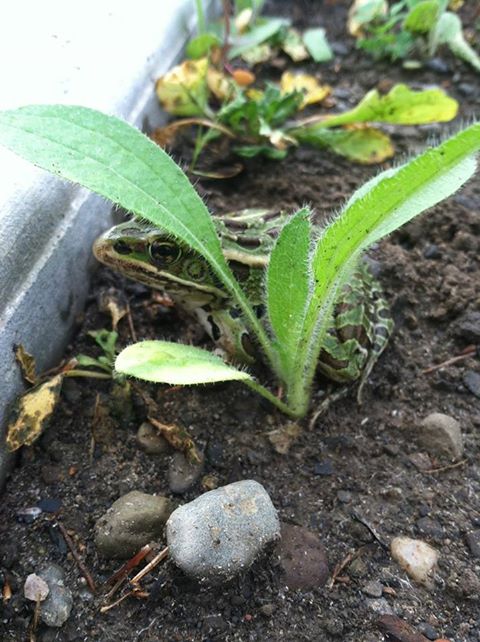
Photo of the Week - Northern Leopard Frog - (NY)

Photo of the Week - 9/16/13

This Northern Leopard Frog was found hiding at Iroquois National Wildlife Refuge.